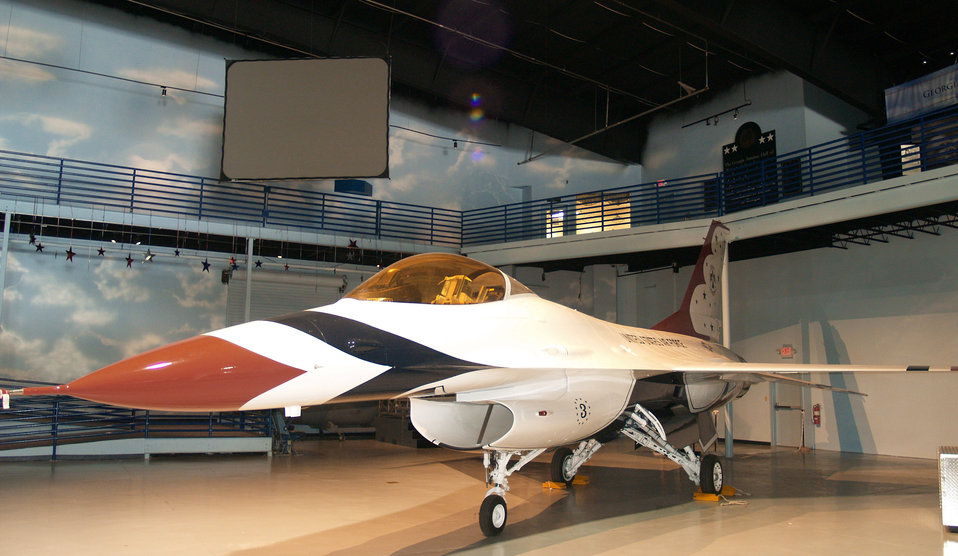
Museum opens Thunderbirds F-16 aircraft exhibit

An F-16 Fighting Falcon painted in the Thunderbirds aerial demonstration team paint scheme is put on display at the Museum of Aviation April 29 in Warner-Robins, Ga.